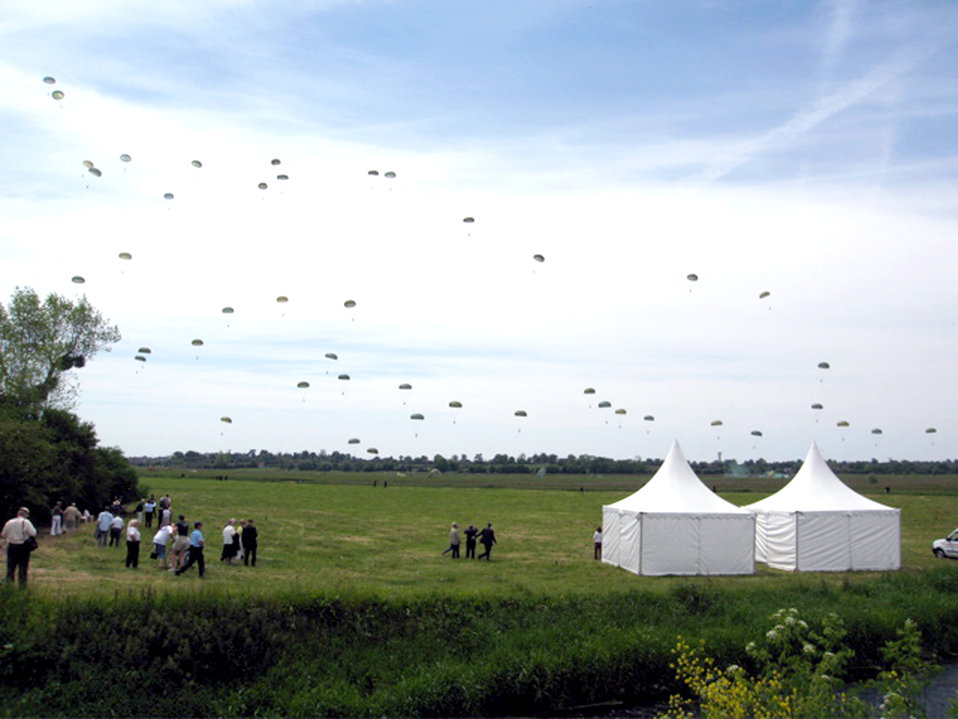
Parachute drop brings appreciation for freedom

Paratroopers land in a drop zone as part of observances for the 62nd anniversary of D-Day in Normandy, France, on June 4. The paratroopers were a combined force from the U.S., Canada, France, Britain and Germany participating in Operation Airdrop Warrior 2006. The airdrop event was held two days before the actual anniversary.